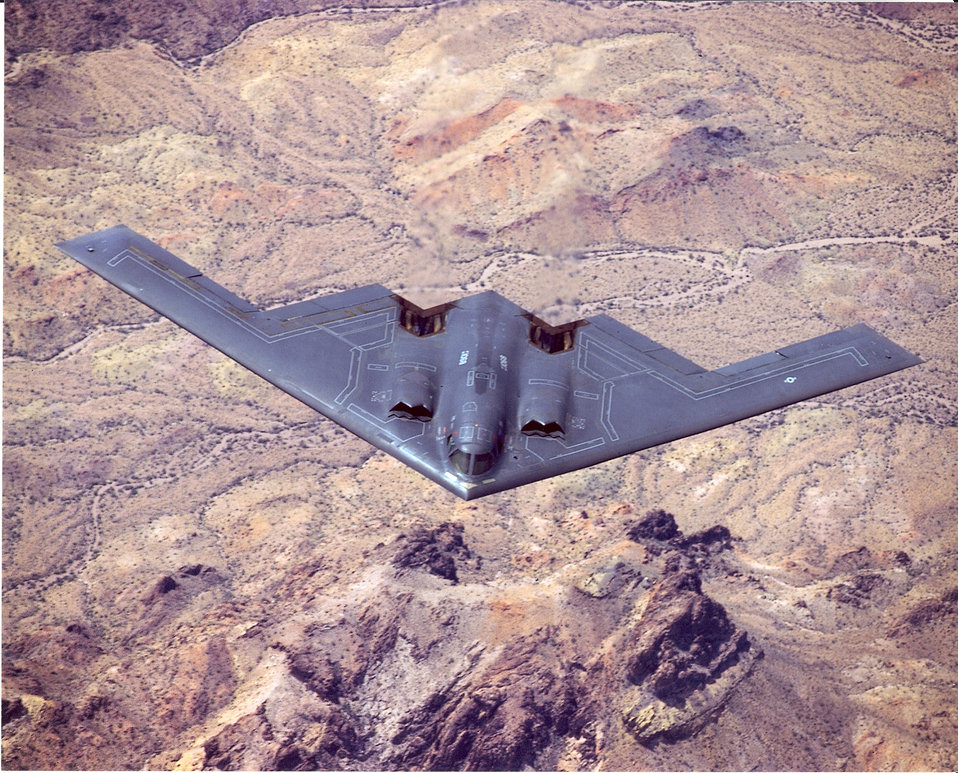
B-2 first flight

The B-2 stealth bomber completed its first flight at Edwards Air Force Base, Calif., July 17, 1989.